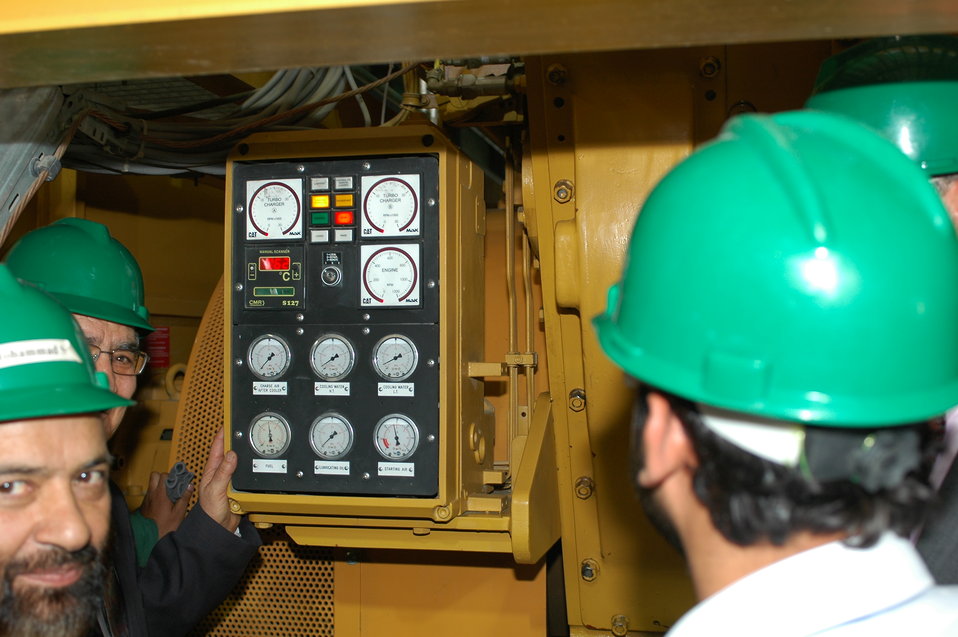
105 MW Tarakhil Power Plant Handover